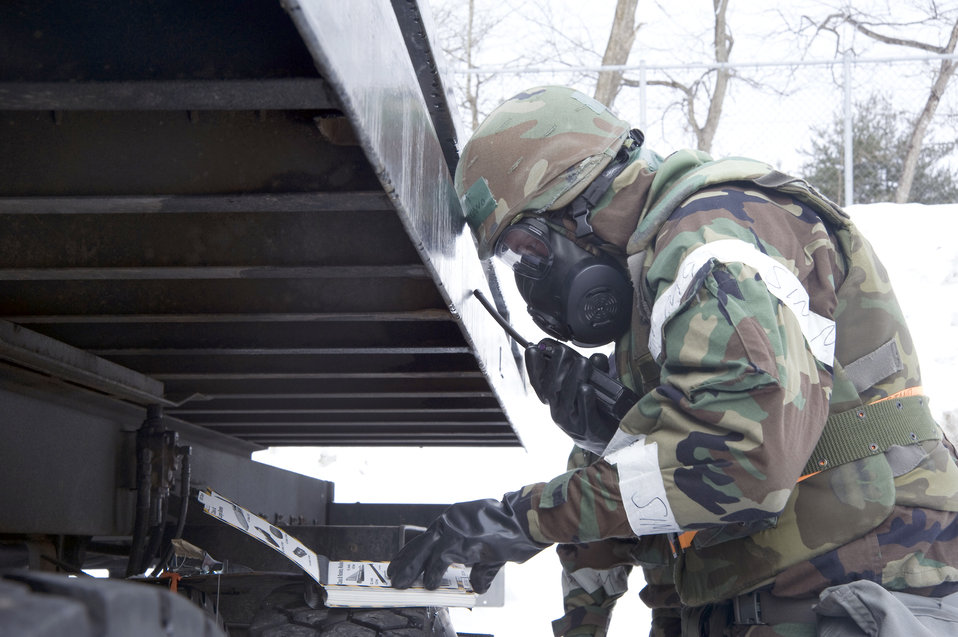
A volatile find

Staff Sgt. David Montejano reports